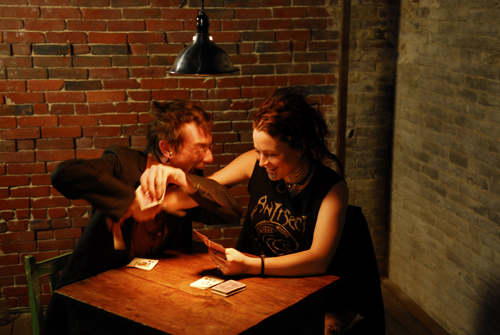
author: HUMANWINE source: HUMANWINE.org